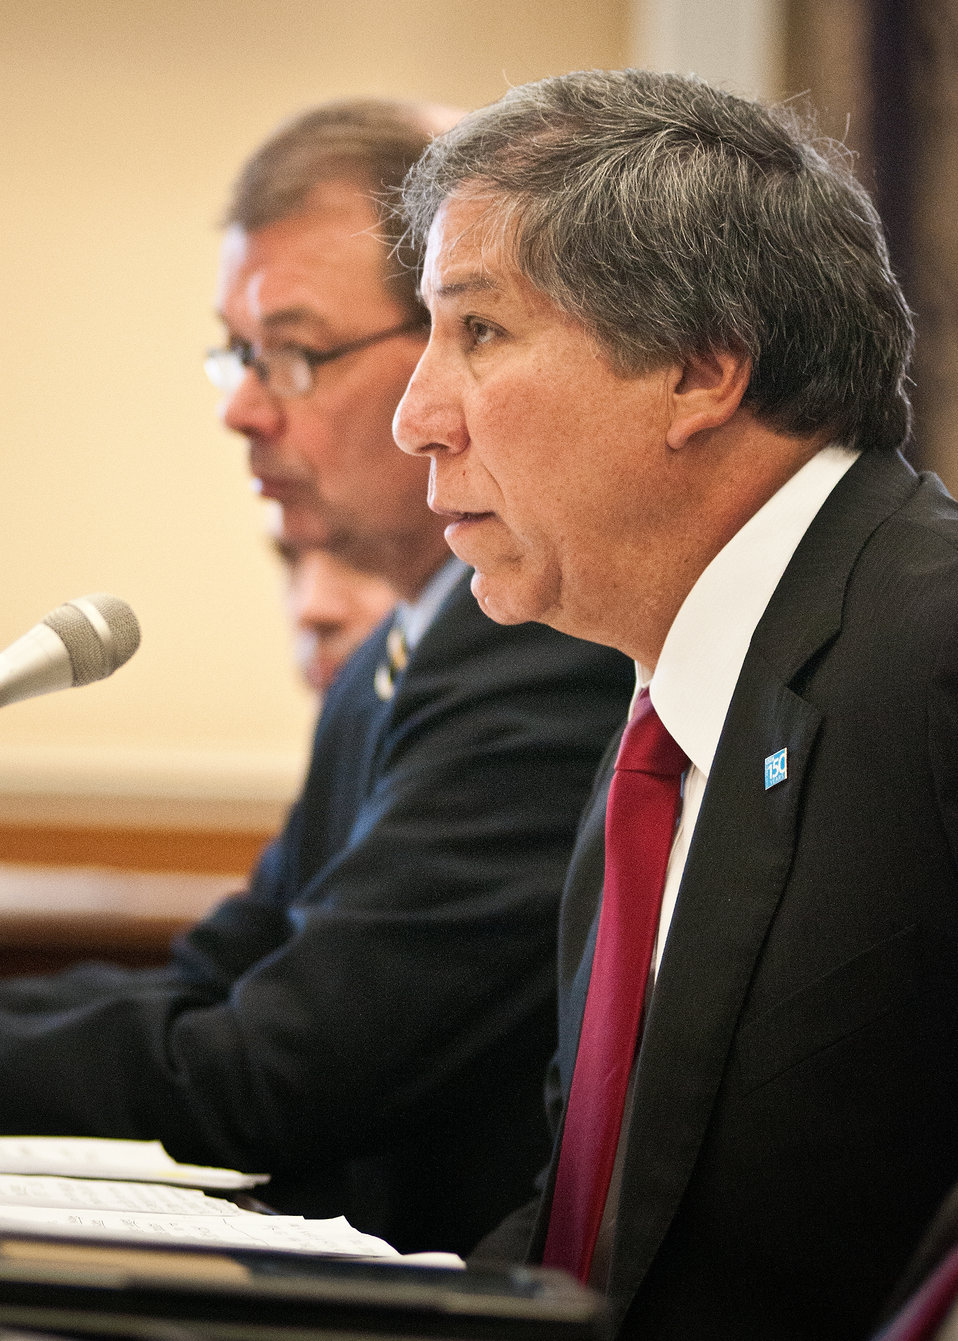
Ed Avalos, Under Secretary, Marketing and Regulatory Programs answers questions posed by members of the House Agriculture Appropriations Subcommittee while testifying on Capitol Hill with representatives of the Marketing and Regulatory Program agencies on their fiscal year 2013 budget requests in Washington, D.C., Tuesday, March 6, 2012.